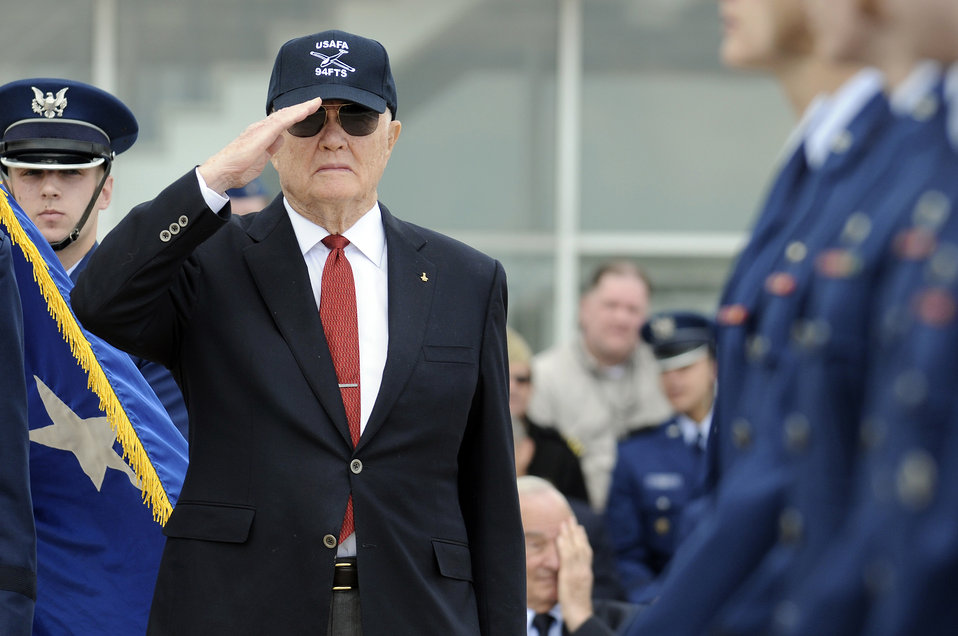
Academy honors Senator Glenn

Sen. John Glenn salutes the color guard during the noon meal parade April 22 on the U.S Air Force Academy's terrazzo. He was visiting the Academy to be honored as the recipient of the 2008 Thomas D. White National Defense Award.